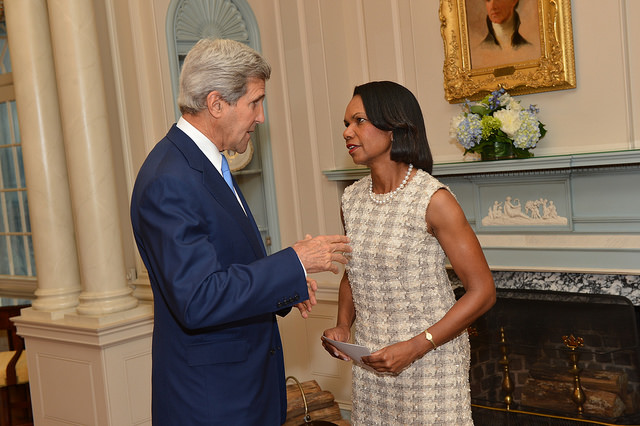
Secretary Kerry Holds Discussion With Former Secretary of State Condoleezza Rice at an Portrait Unveiling Ceremony in Honor of the Former Secretary

U.S. Secretary of State John Kerry holds discussion with Former Secretary of State Condoleezza Rice at an portrait unveiling ceremony in honor of the Former Secretary at the U.S Department of State in Washington, D.C. on June 18, 2014.